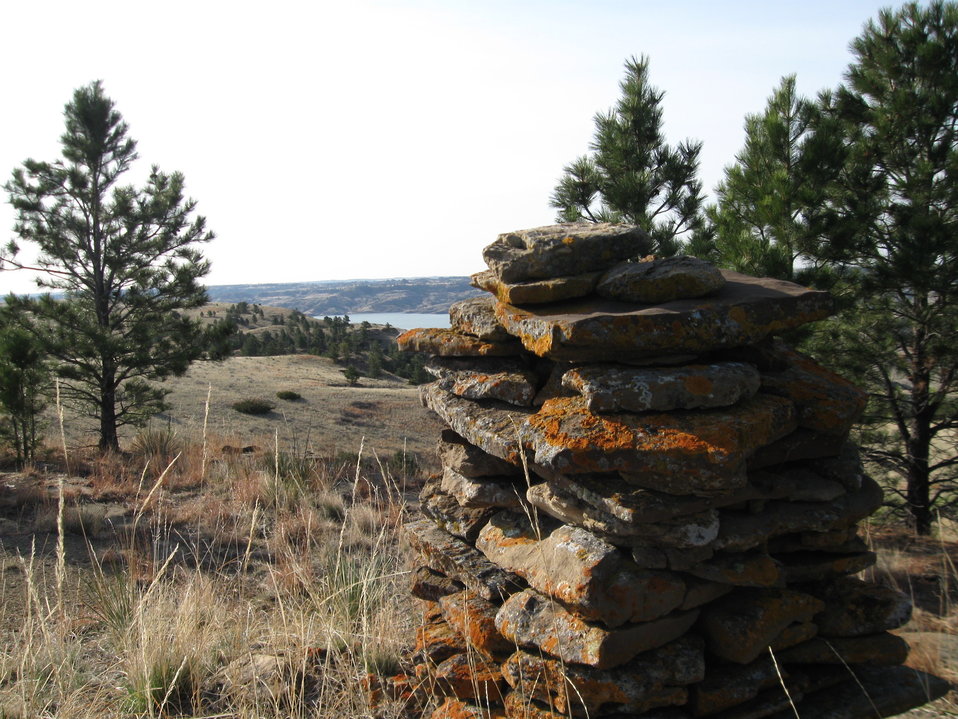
Cabin Coulee

View of the Missouri River and Fort Peck Lake looking past a sheep herder's monument (cairn).